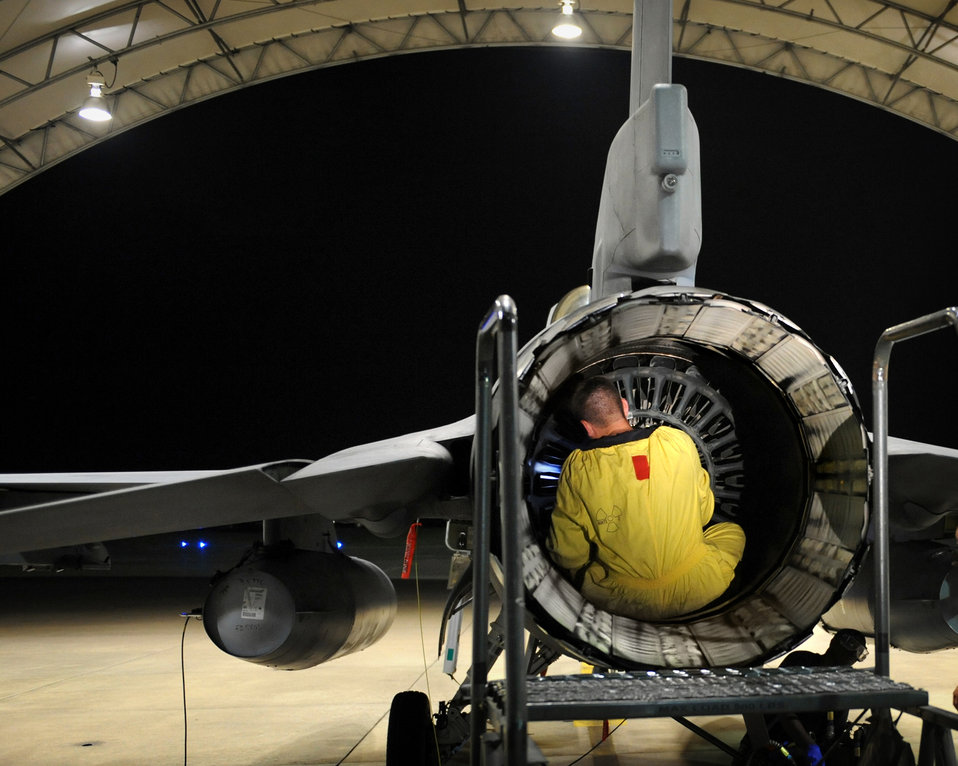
Everything looks good

A mere 7 minutes after engine shutdown following a training mission, a crew chief from the 20th Fighter Wing at Shaw Air Force Base, S.C., inspects the exhaust area of an F-16 Fighting Falcon to ensure the quickest return of the aircraft to ready status.